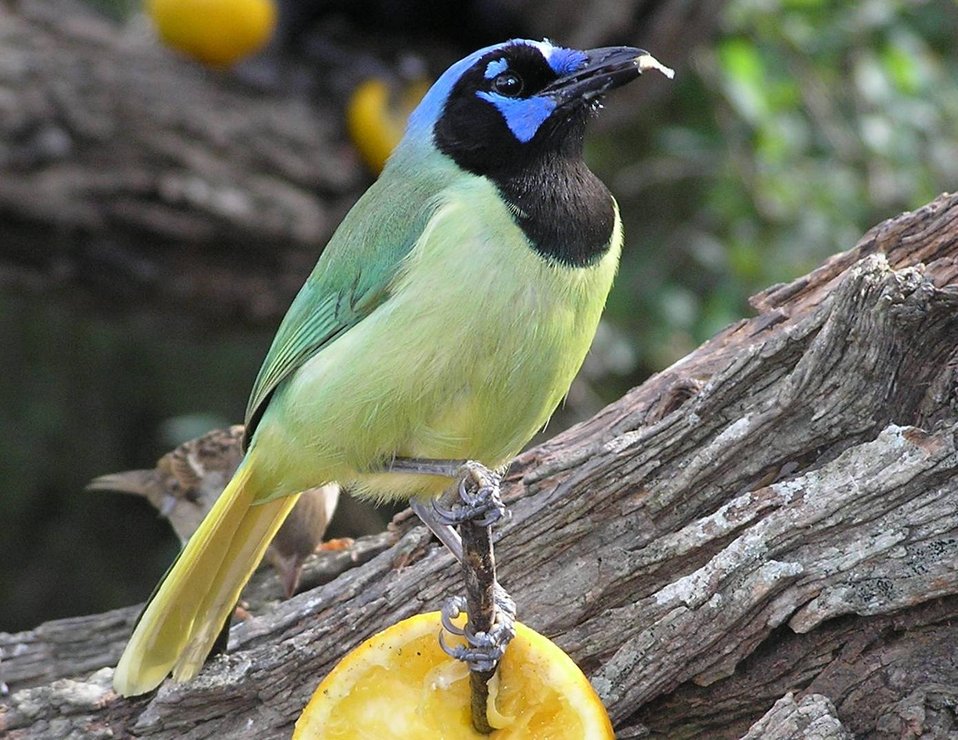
Green jay

Laguna Atascosa National Wildlife Refuge, TX.